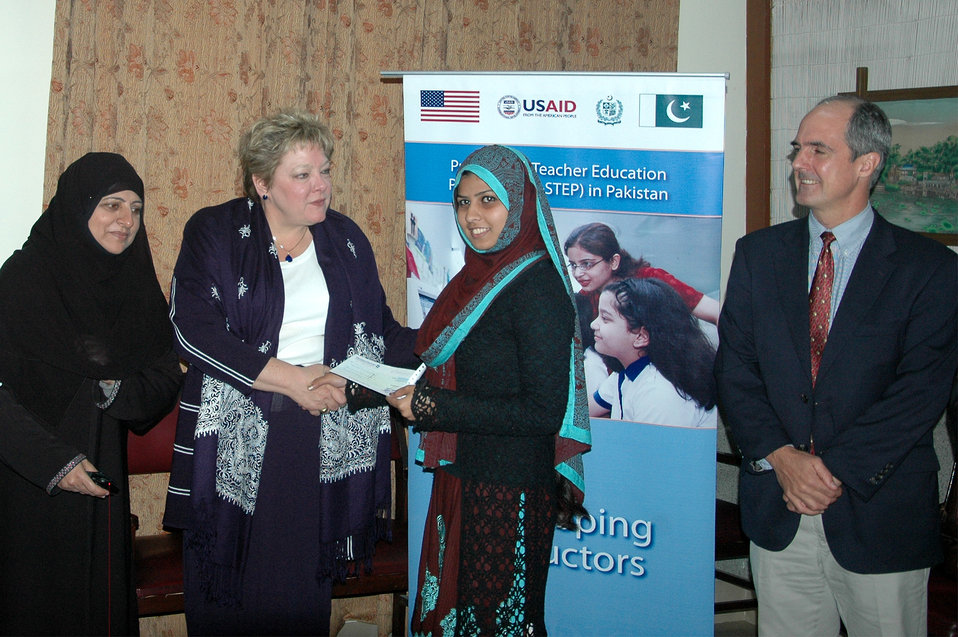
Pre-Service Teachers Education Program (Pre-STEP)

Lahore, February 21, 2012 - Deputy Mission Director USAID Ms. Karen Freeman distributing scholarships to B. Ed (Hons.) students at IER, University of the Punjab. Mr. Ted Gehr, Provincial Director USAID/Punjab is also present at the occasion.